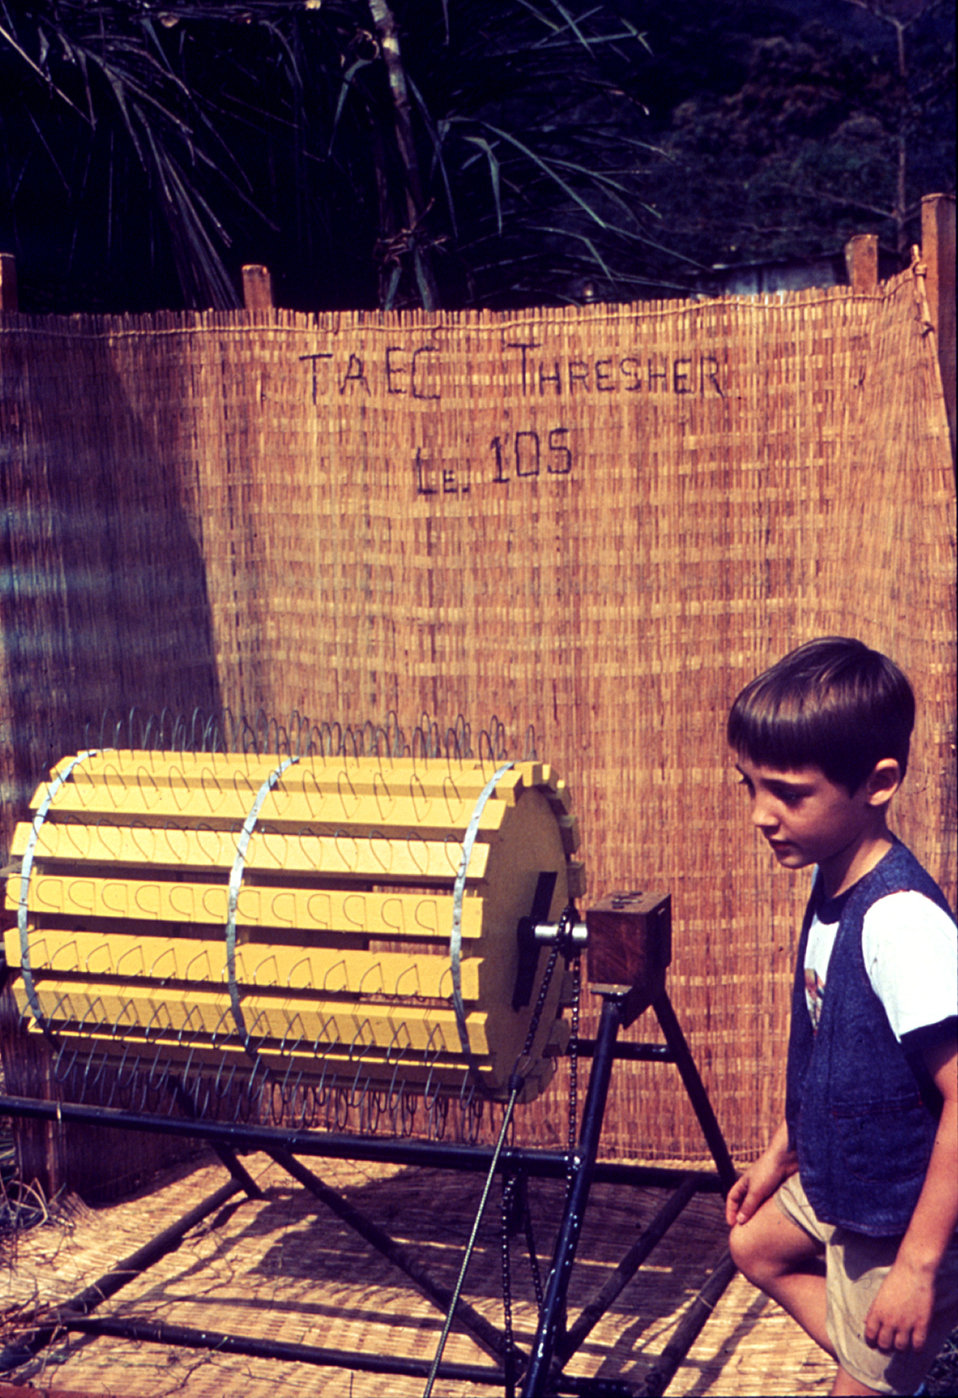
This image depicts a rice threshing machine at the site of a 1976 Sierra Leone Lassa fever field study.